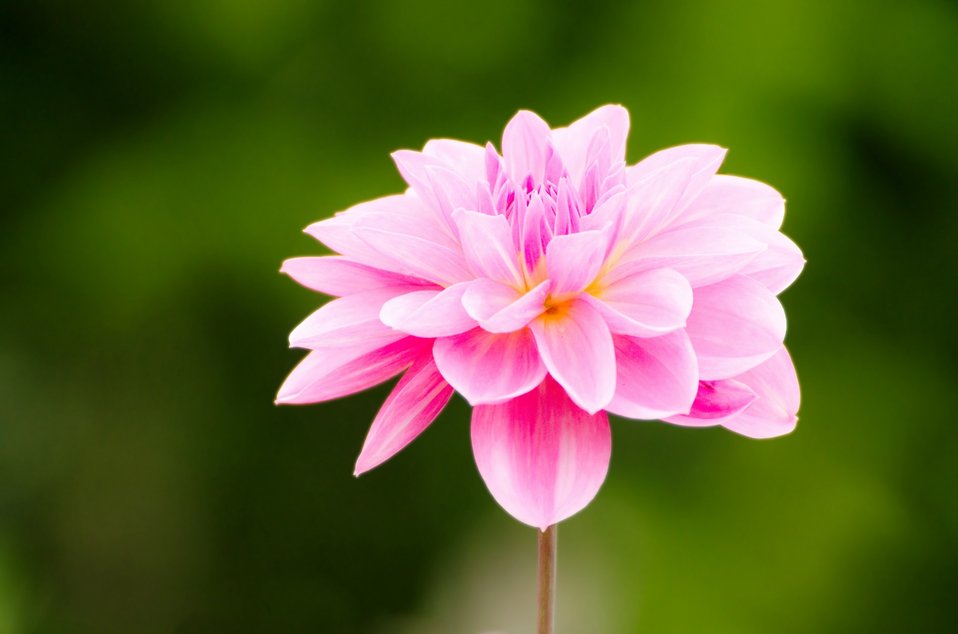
Flower

Flowers on the meadow.